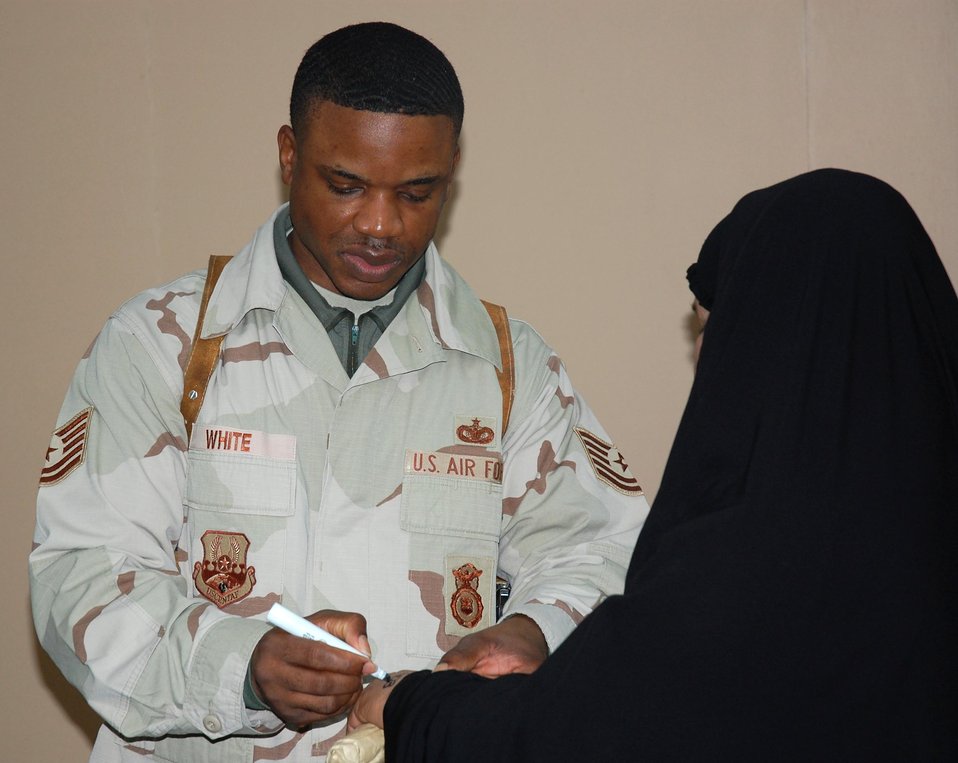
Airmen perform unique missions in Iraq

Tech. Sgt. Mario White processes an Iraqi woman visiting a family member Feb 10 detained in the Theater Internment Facility at Camp Bucca, Iraq. Airmen deployed to the 886th ESFS operate the TIF's vigorous visitation program which houses detainees determined to be a security threat against Iraqi citizens or coalition forces. More than 1,700 friends and family members visit the detainees each week. Sergeant White is an 886th Expeditionary Security Forces Squadron deployed from Royal Air Force Lakenheath, England.